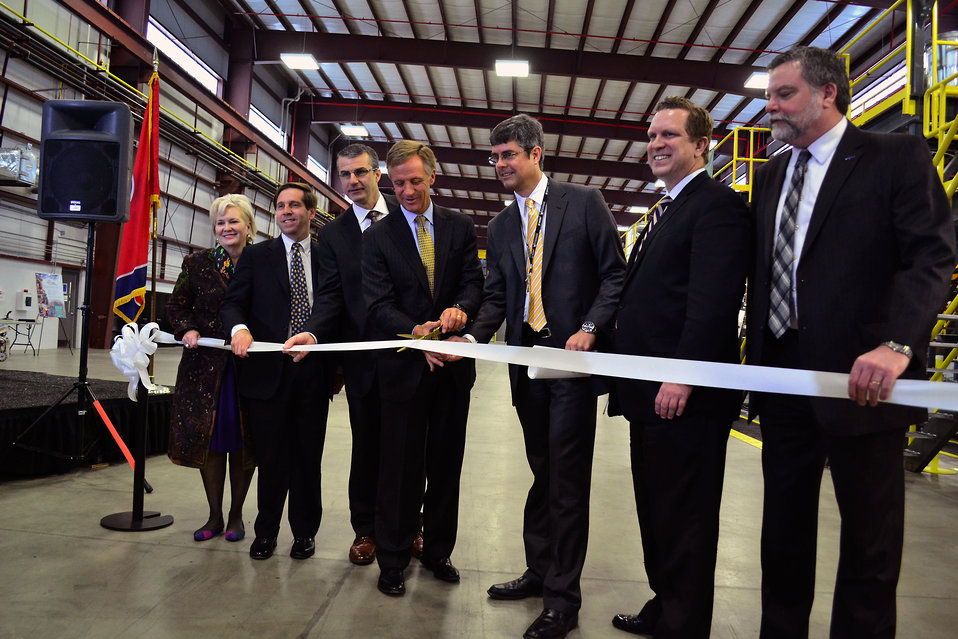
Carbon Fiber Technology Facilty Open House Oak Ridge Tennessee

13-025 DOE photo Lynn Freeny